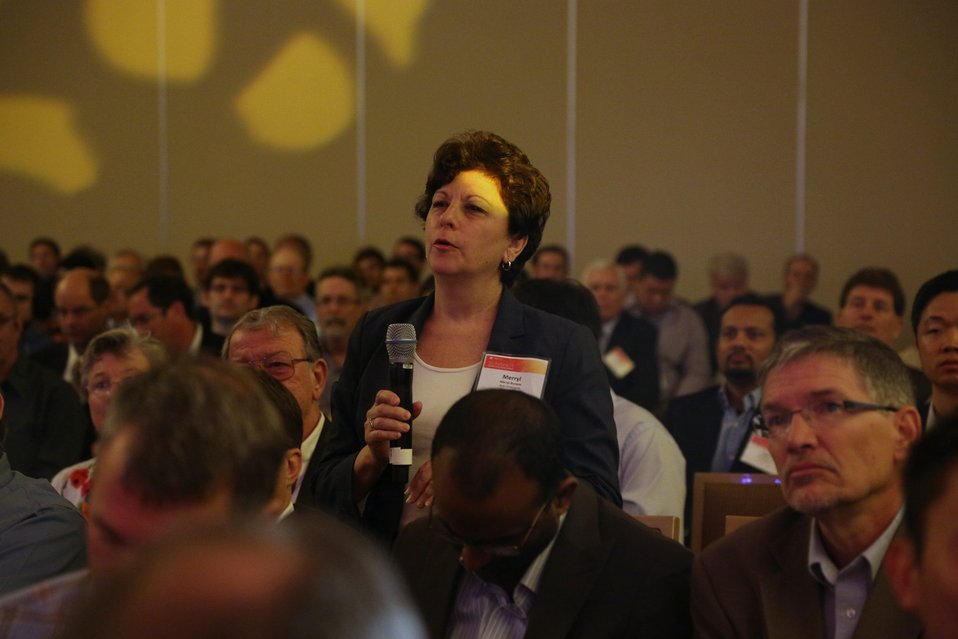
Day 2 Keynote Session 5

Keynote speakers take questions from attendees.